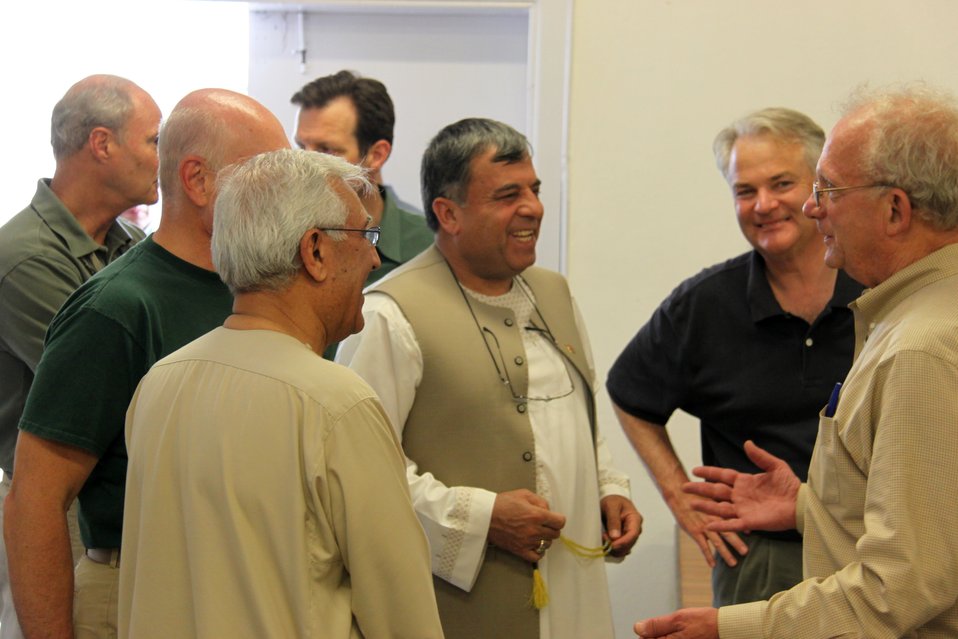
Meeting with Local Leaders in Kandahar